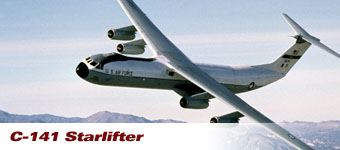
C-141A Starlift arrives

The first C-141A Starlifter arrives in California April 1965.